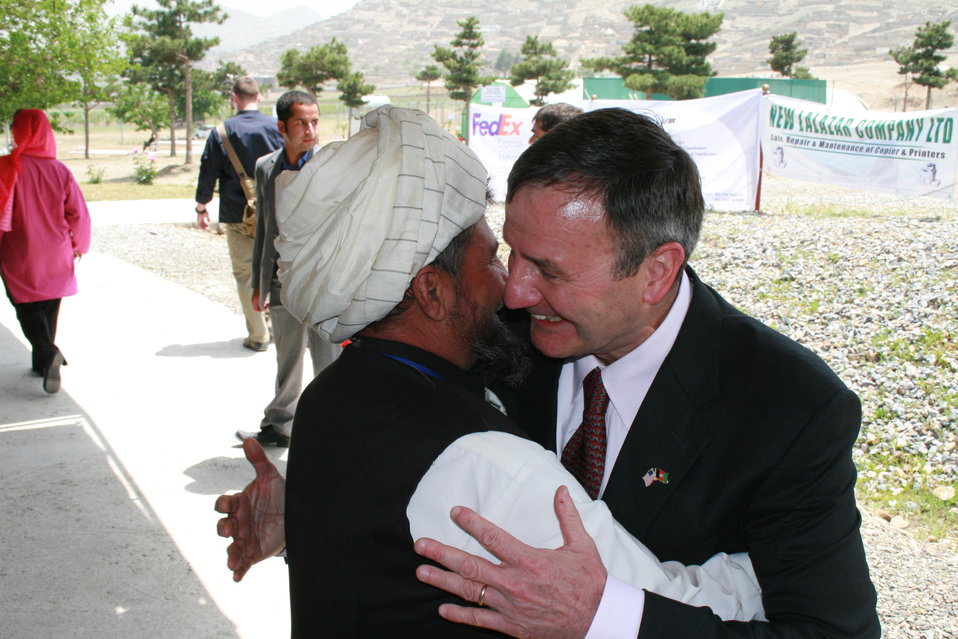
AgFair seeing old friends

On May 20, 2009, Ambassador Eikenberry joined government officials, farmers, agribusiness representatives, and international investors at the launch of the Kabul International AgFair on May 20. Held at the Ministry of Agriculture, Irrigation and Livestock’s Badam Bagh Demonstration Farm in Kabul, the fair showcases Afghanistan’s wealth of fresh produce, provides lucrative business opportunities, and demonstrates innovative agricultural technologies. It is expected to attract more than 50,000 participants from May 21-22.

U.S. Ambassador Karl Eikenberry and Afghan Acting Minister of Agriculture, Irrigation and Livestock (MAIL) Saleem Kunduzi gave opening remarks at the AgFair’s launch. “The United States Government is co-sponsoring national and regional AgFairs like this one to encourage trade and generate business opportunities in the agriculture sector,” Ambassador Eikenberry said. “In a country that is 80 percent rural, promoting licit crops and agriculture sector job creation are two essential steps to successful development in the region.”

Member of Parliament Abdul Salam Qazizada offered bold remarks, stating that we need to engage more with farmers in every province throughout the country.

Following the ceremony, Ambassador Eikenberry visited a number of vendors at the fair with Acting Minister Kunduzi and Mr. Qazizada. In speaking with farmers displaying their produce, Ambassador Eikenberry found that many have increased yields due to USAID assistance, have found regional buyers for their produce, and were grateful for the opportunities that AgFair provides.

Ambassador Eikenberry also discussed the state of agriculture with Minister Kunduzi and Mr. Qazizada. They agreed that while some progress has been made, there is a great deal more work to be done. Ambassador Eikenberry reiterated from his speech that USDA Secretary Vilsack recently met with Minister Rahimi to discuss the U.S. commitment to agriculture development. In a message to the Afghan public, Secretary Vilsack stressed that the USG aims to play a leading role by bringing more agriculture experts to the provinces and supporting agriculture research such as the Badam Bagh Demonstration Farm. Additionally, he looks “forward to working together to increase agricultural productivity, which will result in more jobs throughout the entire value chain, and a better quality of life for the citizens of Afghanistan.”

The United States Government is proud to support Afghan agriculture. Since 2002, America has provided more than 1 billion dollars in assistance to agriculture and rural development. AgFairs like the one Ambassador Eikenberry visited creates awareness of Afghanistan’s expanding agricultural sector, promotes new agricultural technologies that increase productivity, and provides a forum to connect farmers to local and international buyers. These results will contribute to Afghanistan’s prosperity.

We are already seeing the results of these fairs. Since 2007, Afghanistan’s agricultural fairs have attracted more than 500,000 participants from across the nation and the world, generated millions of dollars in sales of the country’s high-value produce, and provided participants with a competitive edge in one of the fastest growing markets in Central Asia.

As Ambassador Eikenberry stated, “The word is out – with over 180 international businesses represented at this fair, it is obvious that Afghanistan has sparked the interest, and appetite, of the world.”